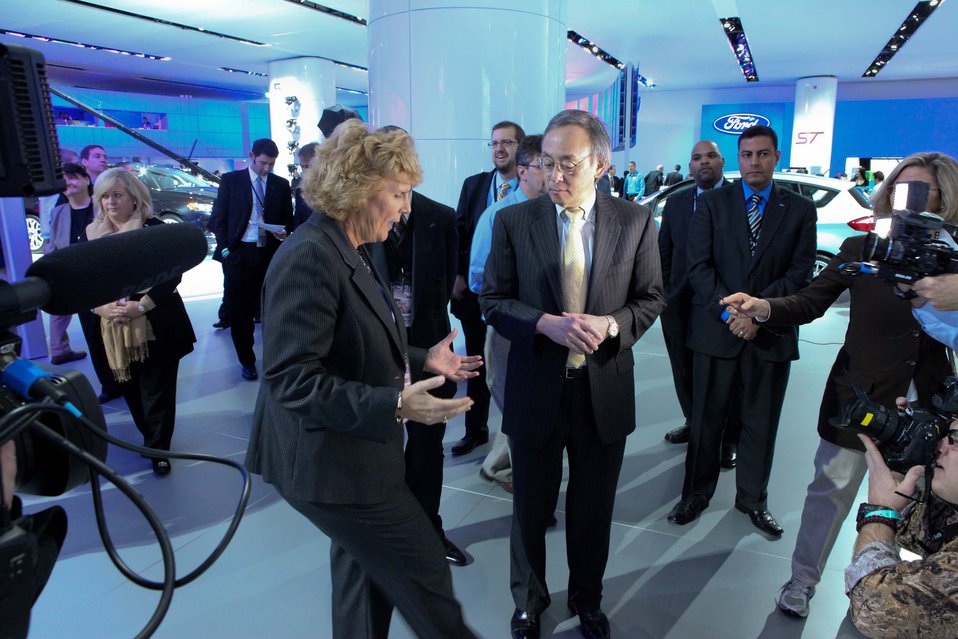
Sue Cischke (Ford Group Vice President) tells Energy Secretary Steven Chu about the 2012 Ford Focus electric.